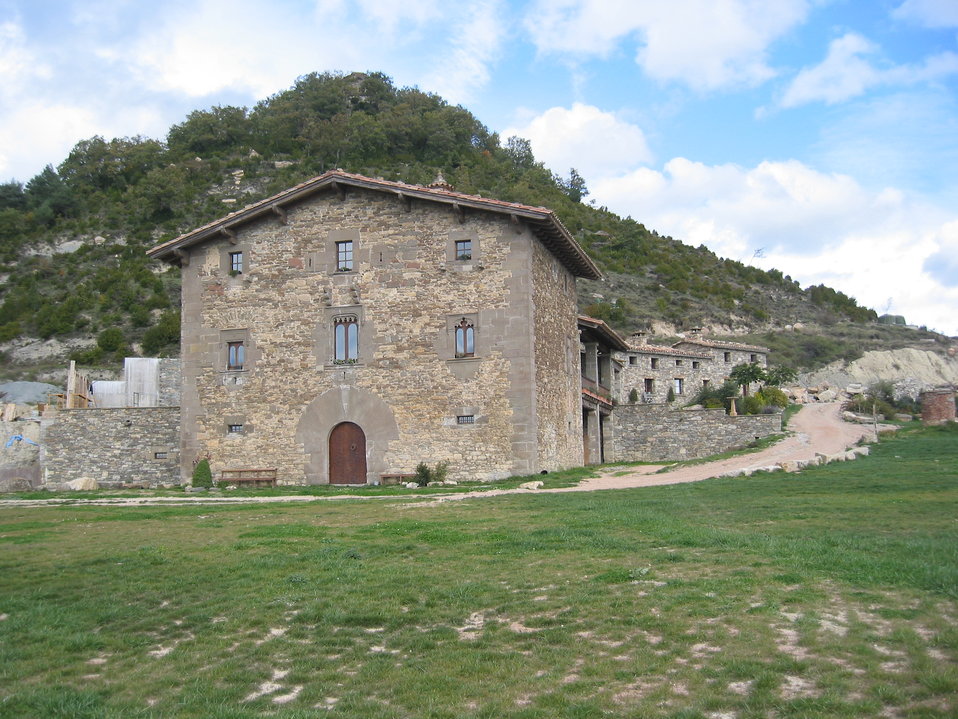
L'Avenc